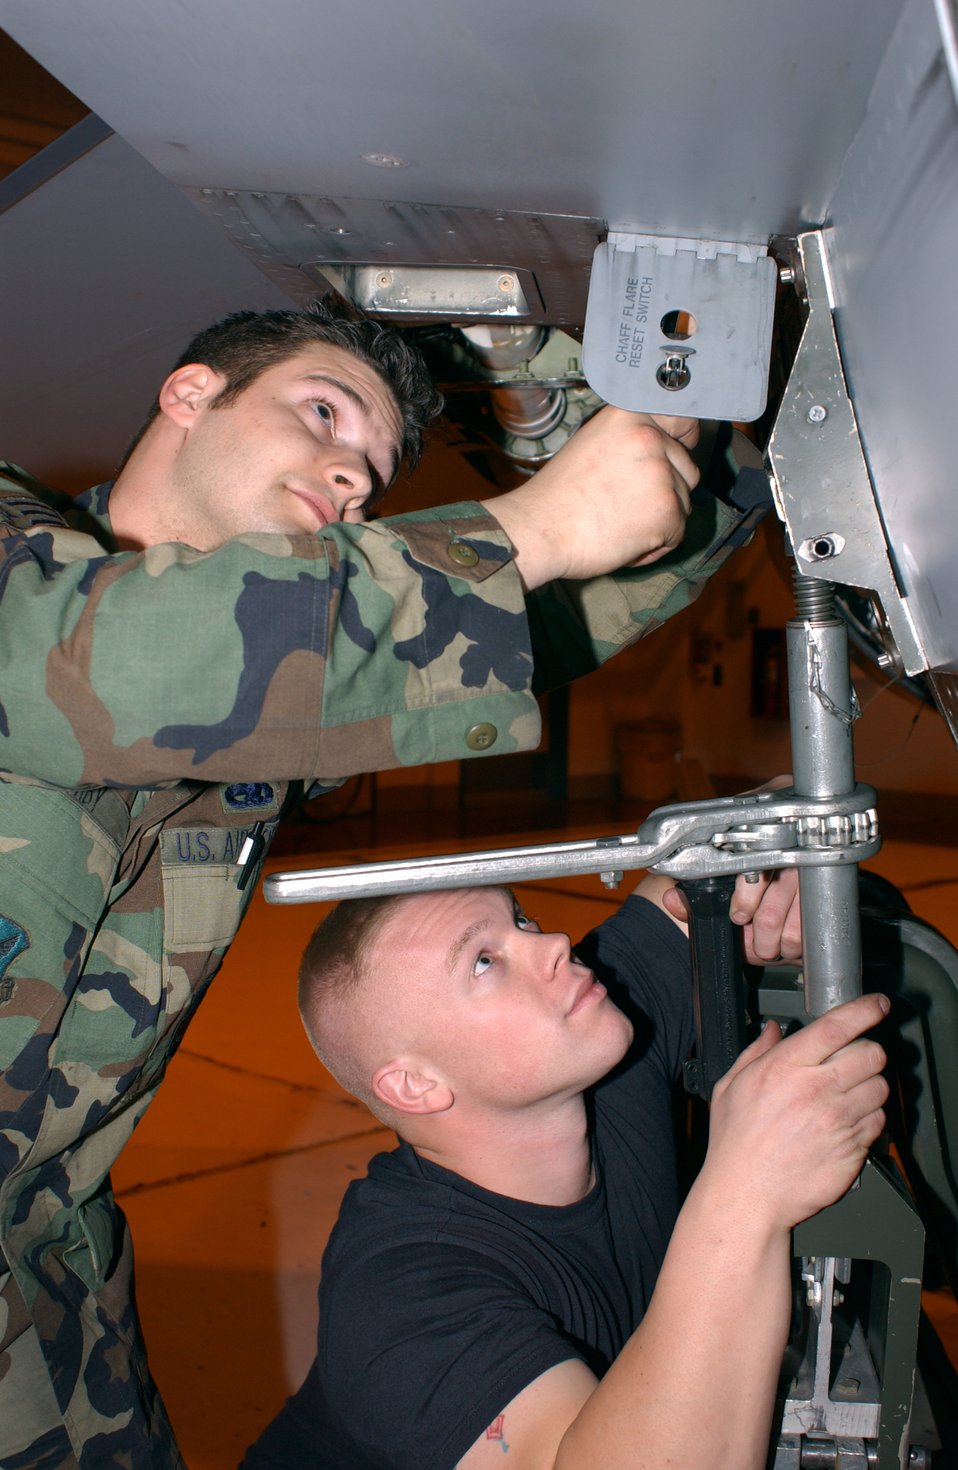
Fixing the Falcon

TRUAX FIELD, Wis. -- Senior Airman Jason Norby (top) and Staff Sgt. Severin Koerner (bottom) perform a squadron phase inspection procedure on a F-16C Fighitng Falcon aircraft during a unit training assembly here March 5. Sergeant Koerner and Airman Norby are both maintenance Airmen with the Wisconsin Air National Guard's 115 Fighter Wing Maintenance Squadron.